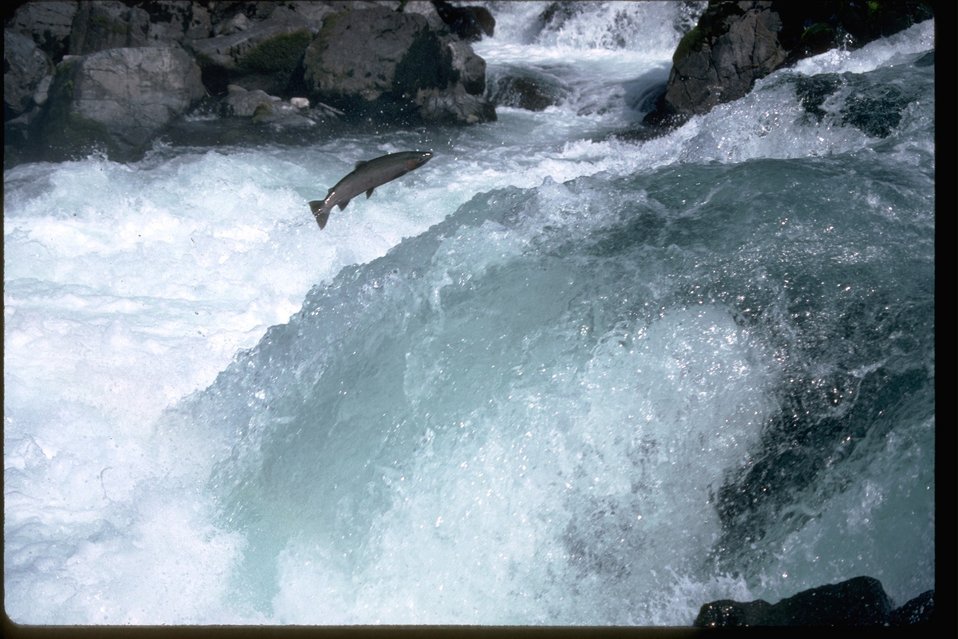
Salmon or Steelhead jumping up falls.